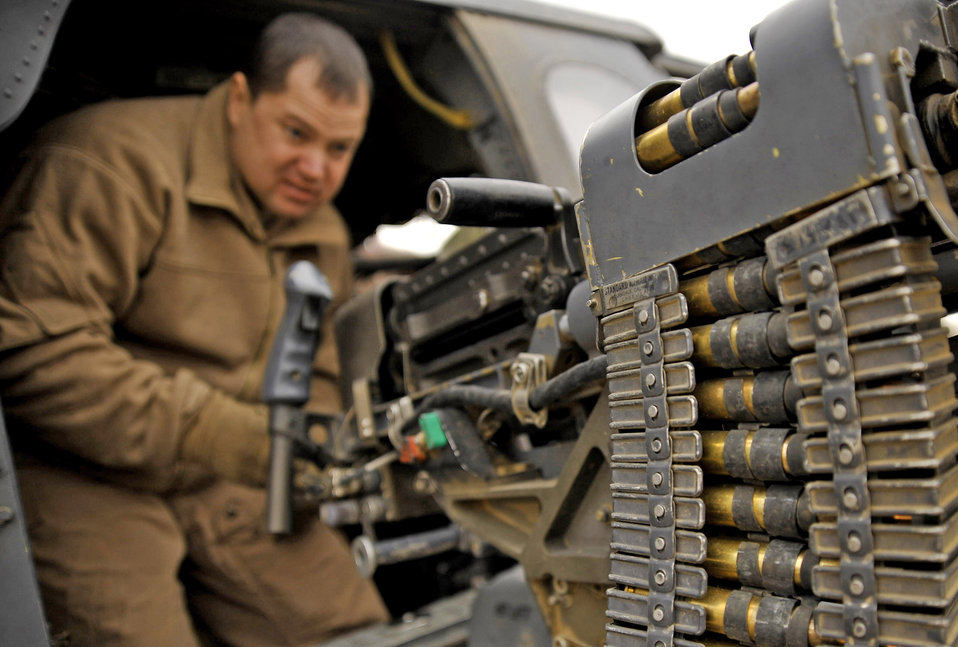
Squadron highlights capabilities during Afghan rescue mission

Master Sgt. Don Ballowe inspects his 50-caliber machine gun Dec. 8, 2009 at Camp Bastion, Afghanistan. While the crew pre-loads the aircraft, they also inspect their equipment to ensure it is properly working before a rescue mission. Sergeant Ballowe is a 66th Expeditionary Rescue Squadron flight engineer.